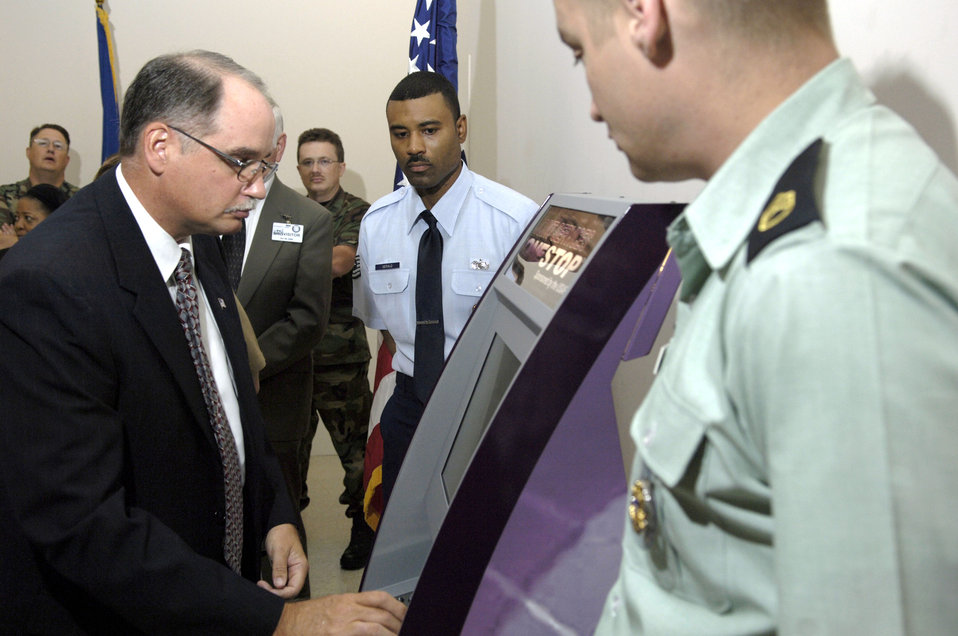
Kiosk offers one-stop customer service

George Varga demonstrates the capabilities of the new Joint Services OneStop Kiosk at the Pentagon on Thursday, June 29. Mr. Varga is the Air Force District of Washington deputy comptroller.